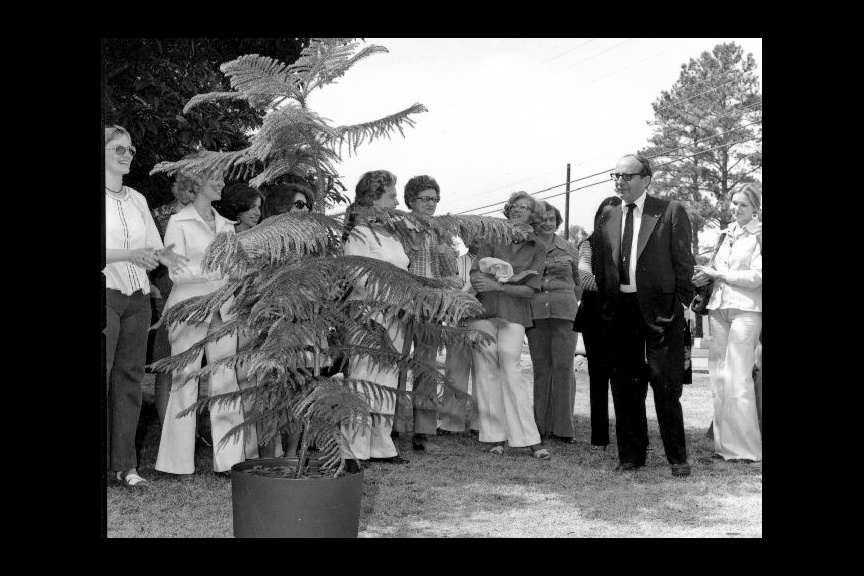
Former Centers for Disease Control (CDC) Director, Dr. David Sencer, presents Norfolk Pine in honor of CDC's Secretaries.